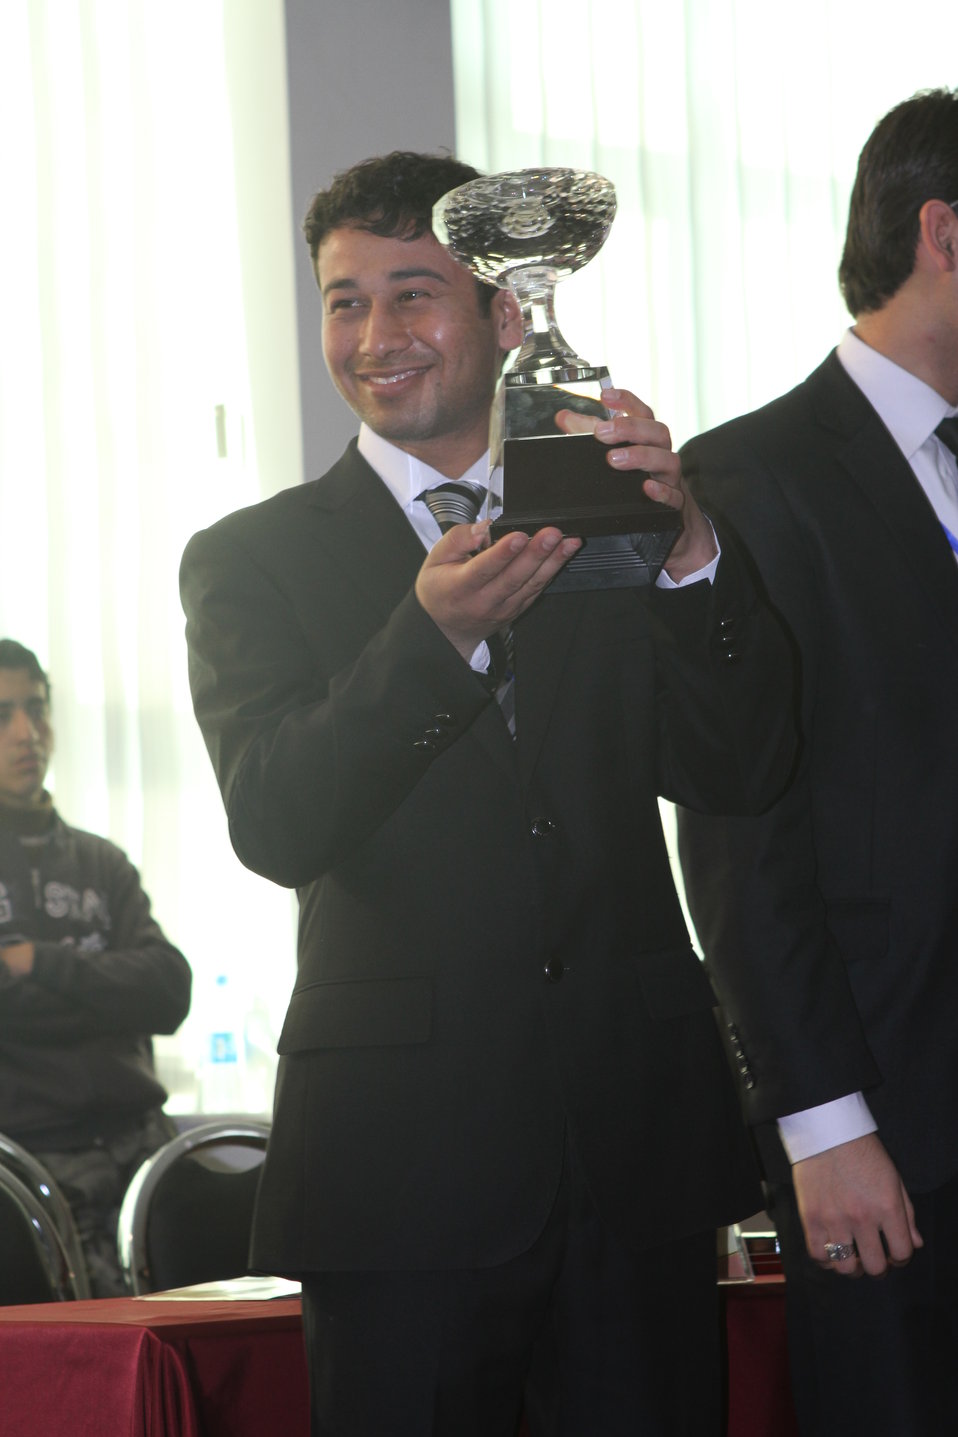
All Smiles Balkh Wins

Balhk student holds up winning Jessup Moot Court on January 11, 2012